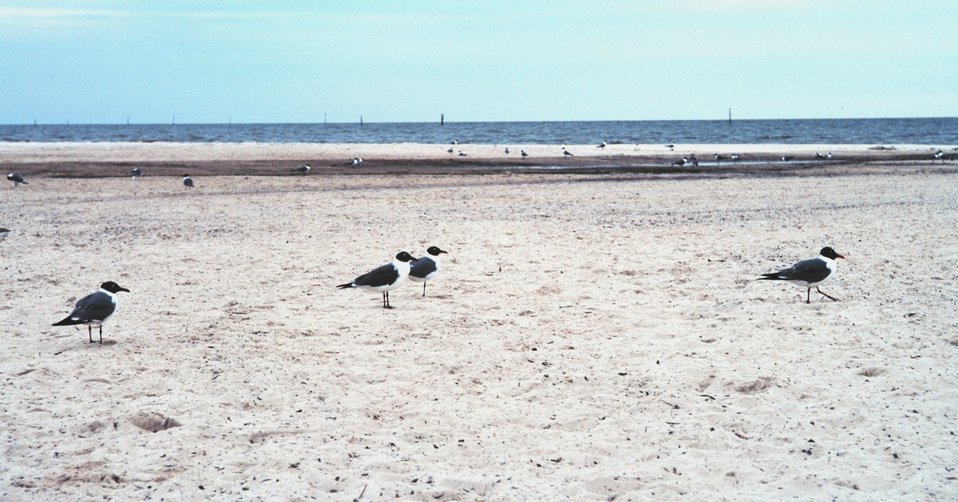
Sea birds along a deserted beach